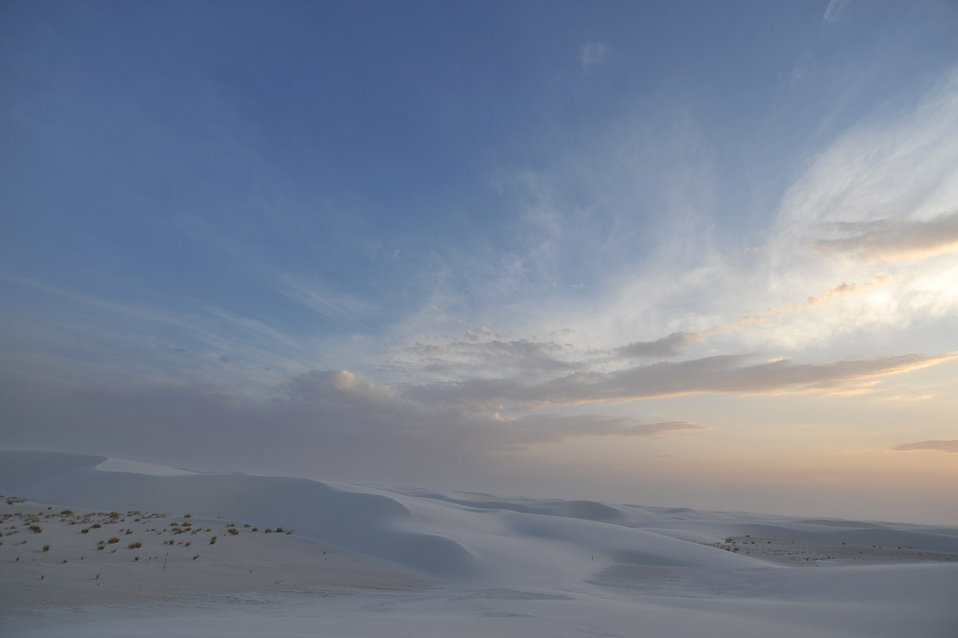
White sands 6

White sands national monument,new mexico.